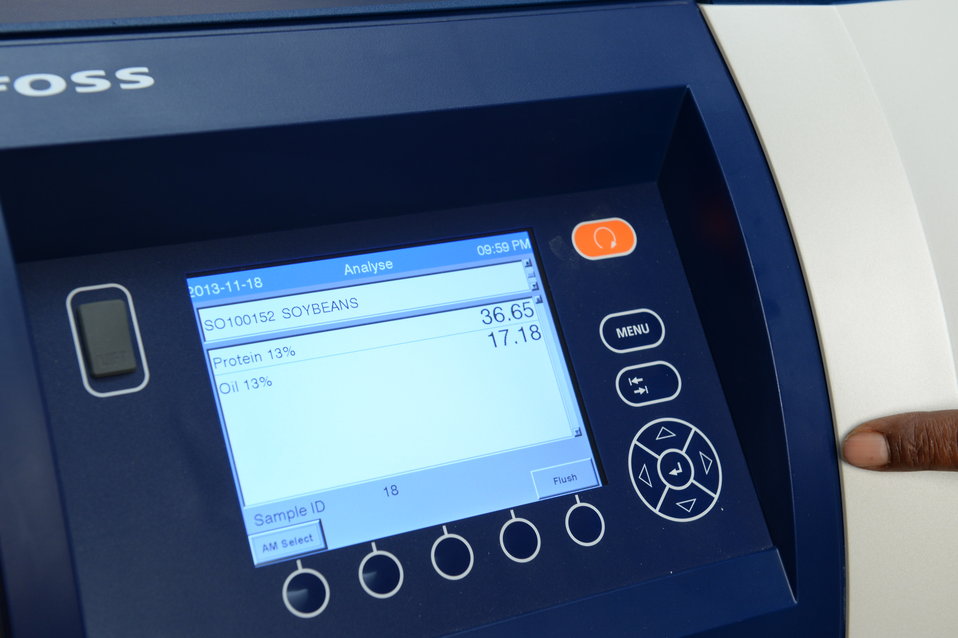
U.S. Department of Agriculture (USDA) Grain Inspection, Packers and Stockyards Administration (GIPSA) Federal Grain Inspection Service (FGIS) employee tests soybean samples at the FGIS inspection laboratory in New Orleans, LA on Monday, Nov. 18, 2013.